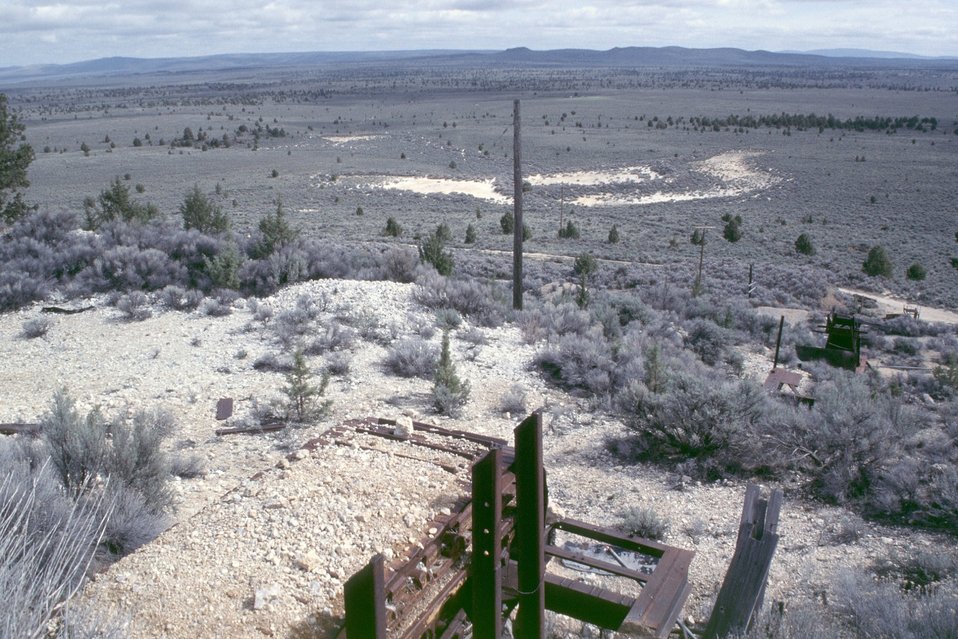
AML Glass Buttes area, G5, Burns District View from the hill above the G5 mill/retort looking toward a power pole that helped supply electricity for a mercury retort between 1967-1970. In the foreground is a dozer tread used as a conveyor belt and maybe as a sorting table for ore before additional crushing to form a powder. The heaviest, mercury-bearing part of the powder was then separated from lighter powder and the lighter powder was piped as a water slurry to the dry pond areas in the distance. Water to form the slurry was pumped from a groundwater well and piped about 1/2 mile to the retort area. The heavier powder was heated in metal tubes wrapped with copper wire to drive off the mercury as a gas. The gas was channeled to condensers where it cooled and the mercury in the gas formed droplets that could be collected into flasks.